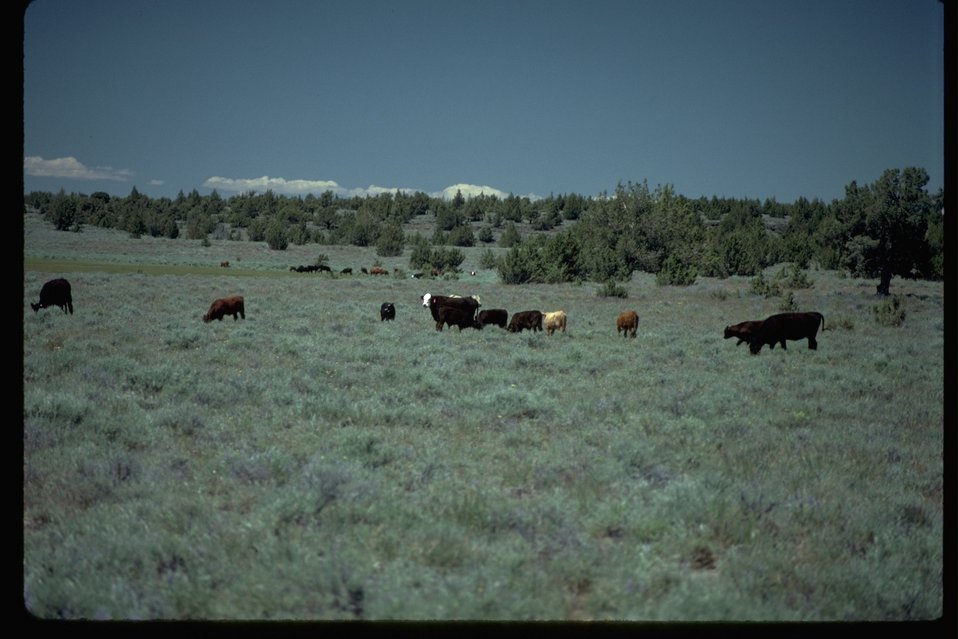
Livestock grazing in the south steens mountain area.